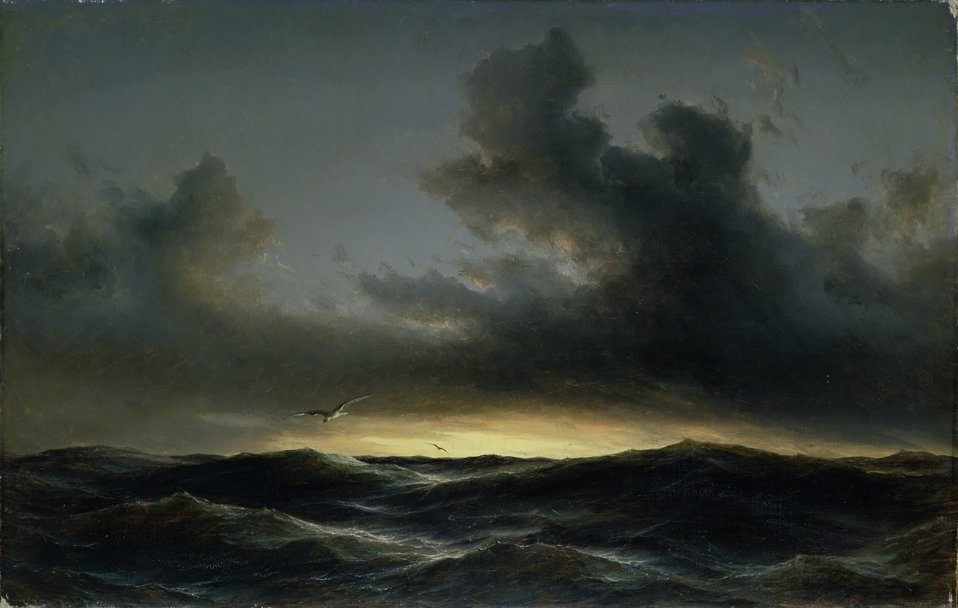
Anton Melbye - Marine Solitude (1852)